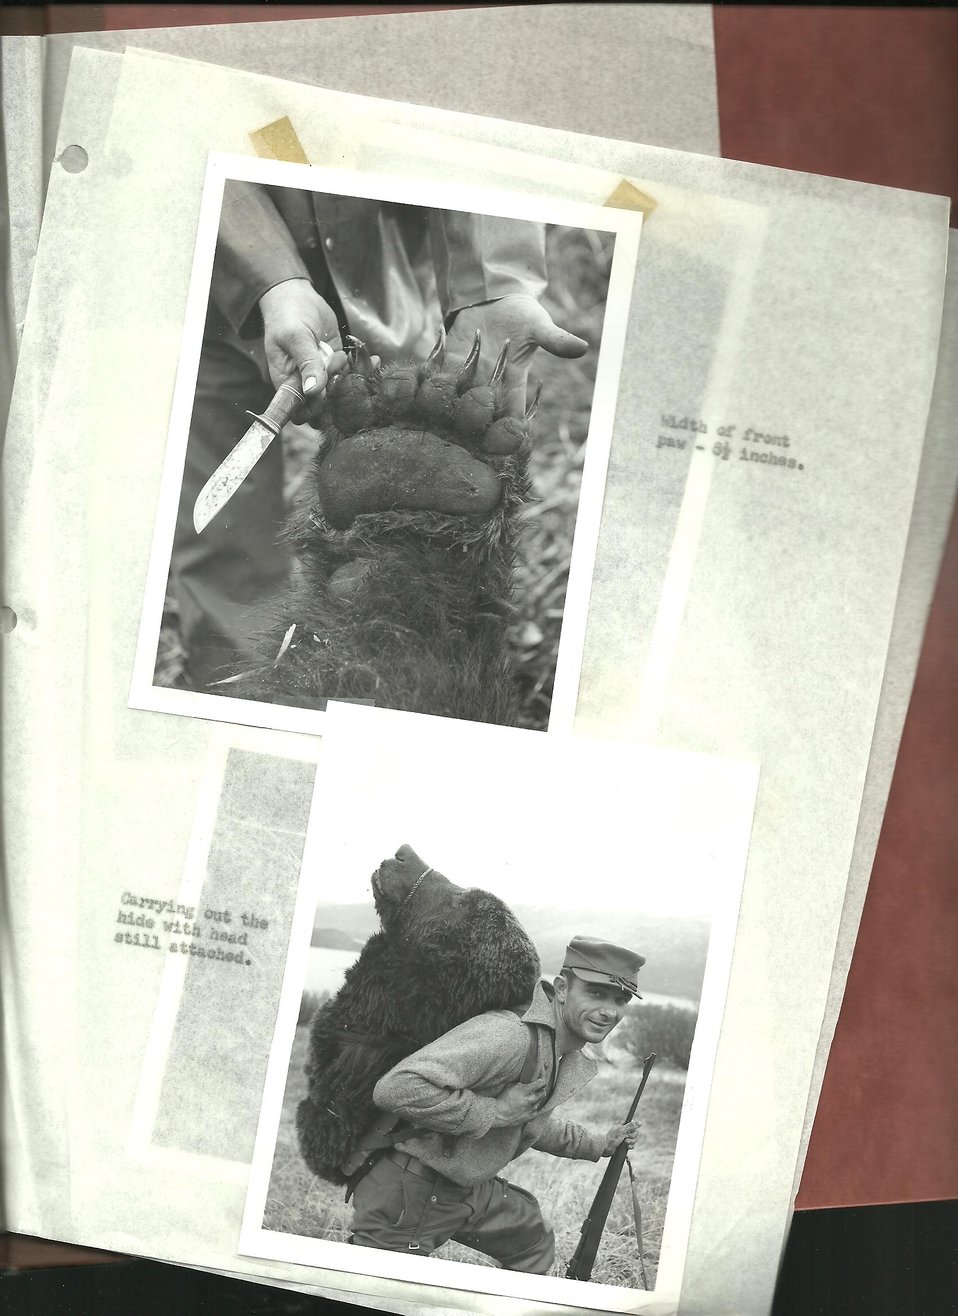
(1957) Hunted Bear Spread

Credit: USFWS

Source and Contact: Kodiak National Wildlife Refuge